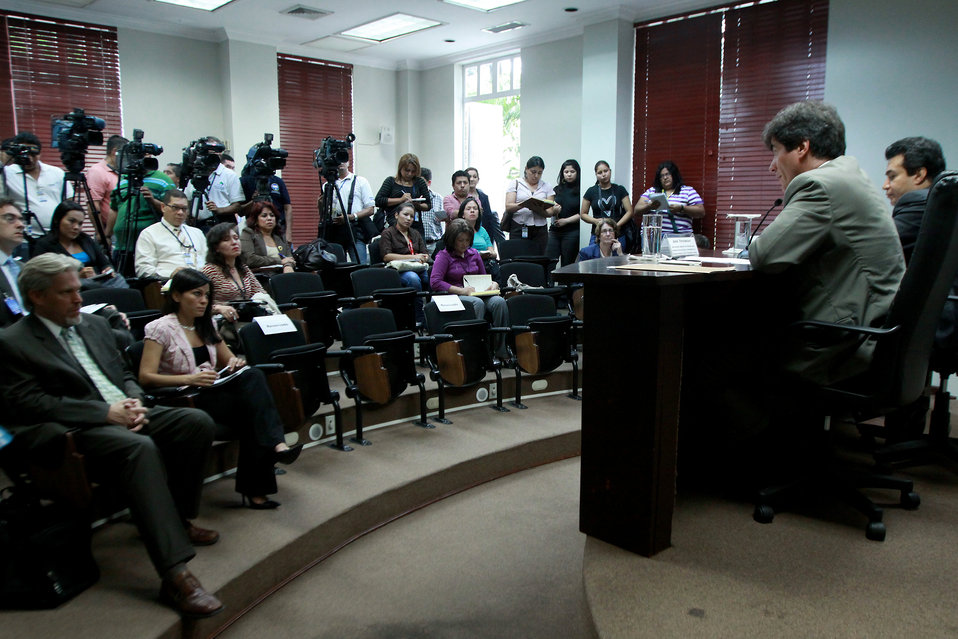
Assistant Secretary Fernandez and Salvadoran Technical Secretary Segovia Speak With Reporters

Assistant Secretary of State for Economic, Energy and Business Affairs Jose Fernandez and Salvadoran Technical Secretary Alexander Segovia speak with the reporters about advances made on negotiations toward an action plan for the Partnership for Growth initiative in San Salvador, El Salvador on August 11, 2011.